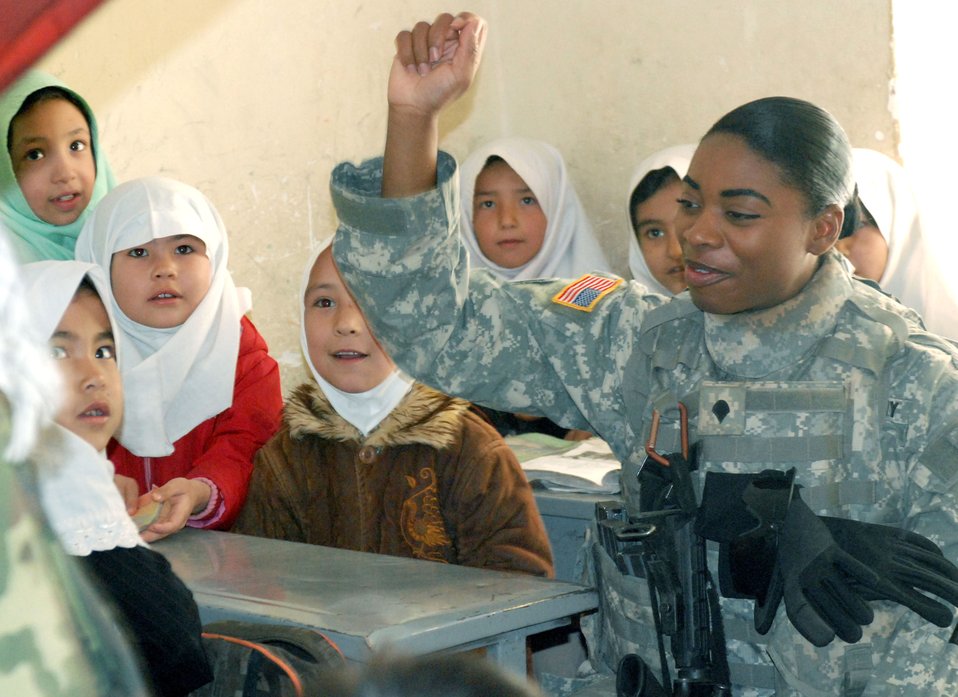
Servicemembers reach out to Afghanistan women

Army Spc. Raven Gibbs encourages children at a Herat elementary school to hold up their books Sept. 29 in Afghanistan. Specialist Gibbs, a medic assigned to Camp Stone in Herat, and nine other U.S. military women met with female teachers to drop off donated and requested supplies and to discuss ways coalition and the Afghan national security forces could be of assistance to the school and to Afghan women in general.